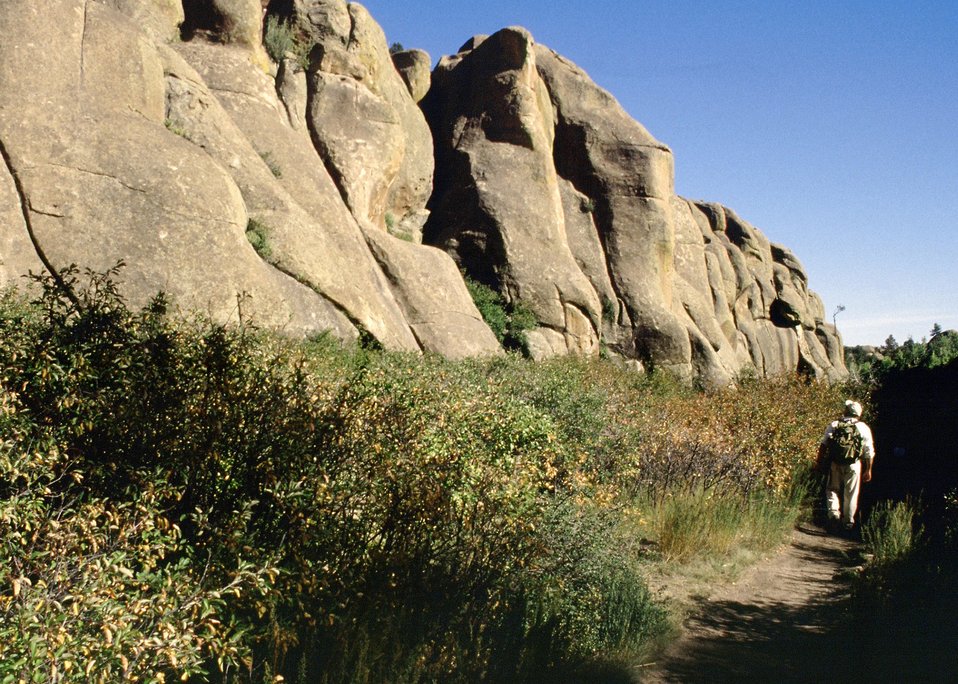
Man on trail